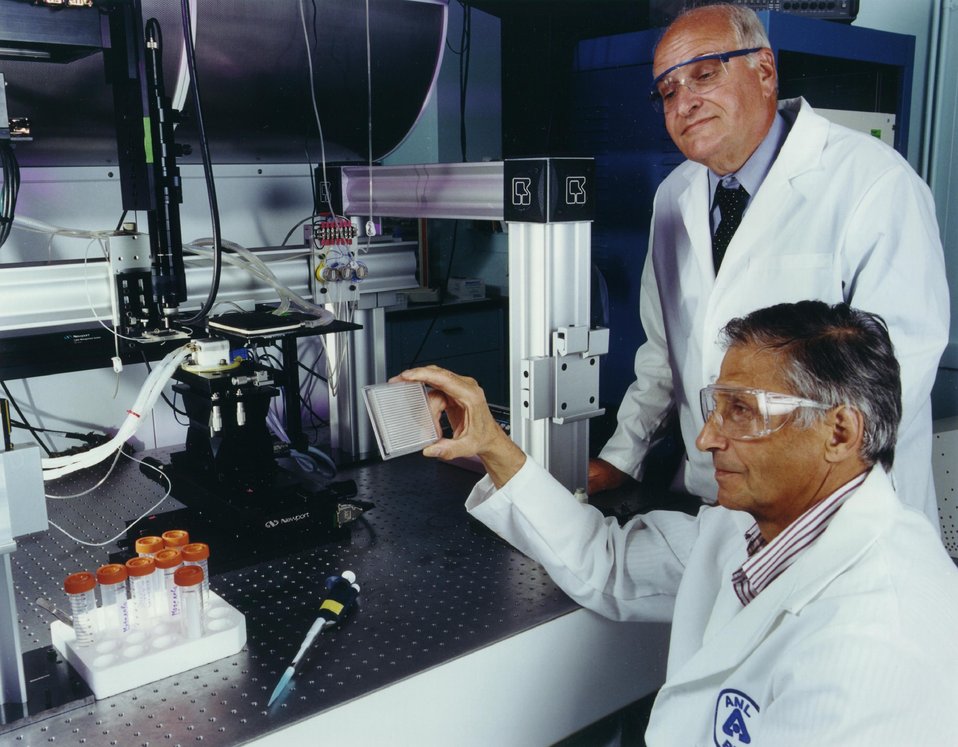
SCIENTISTS HAVE DEVELOPED BIOCHIP TECHNOLOGY THAT QUICKLY IDENTIFIES TUBERCULOSIS LEADING TO MORE EFFECTIVE TREATMENT.

THE ENEMY IS TUBERCULOSIS. THE WEAPON IS A BIOCHIP DEVELOPED AT ARGONNE AND THE RUSSIAN ACADEMY OF SCIENCE'S ENGLEHARDT INSTITUTE OF MOLECULAR BIOLOGY. THE MOVERS BEHIND THE PROJECT ARE ANDREI MIRZABEKOV (SEATED) AND HARVEY DRUCKER.